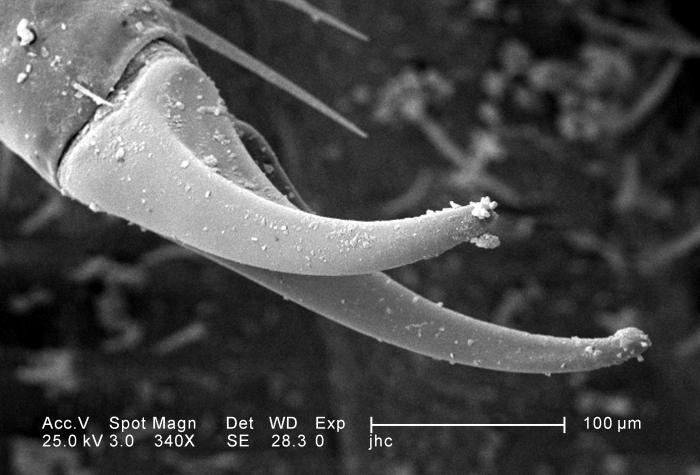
Under a moderate magnification of 340X, this scanning electron micrograph (SEM) depicted the exoskeletal surface of a larval staged antlion, sometimes referred to as a 'doodlebug', because of the trails it leaves in the soft sand as it hunts for prey. This arthropod, i.e., jointed legs, undergoes dramatic morphologic changes when it metamorphoses into a beautiful flying antlion lacewing. In this particular view, the distal end of one of the larva's extremities is highlighted, revealing the claw it uses to grasp objects it encounters in its environment, including sand. See PHIL 11819 for a colorized version of this image.